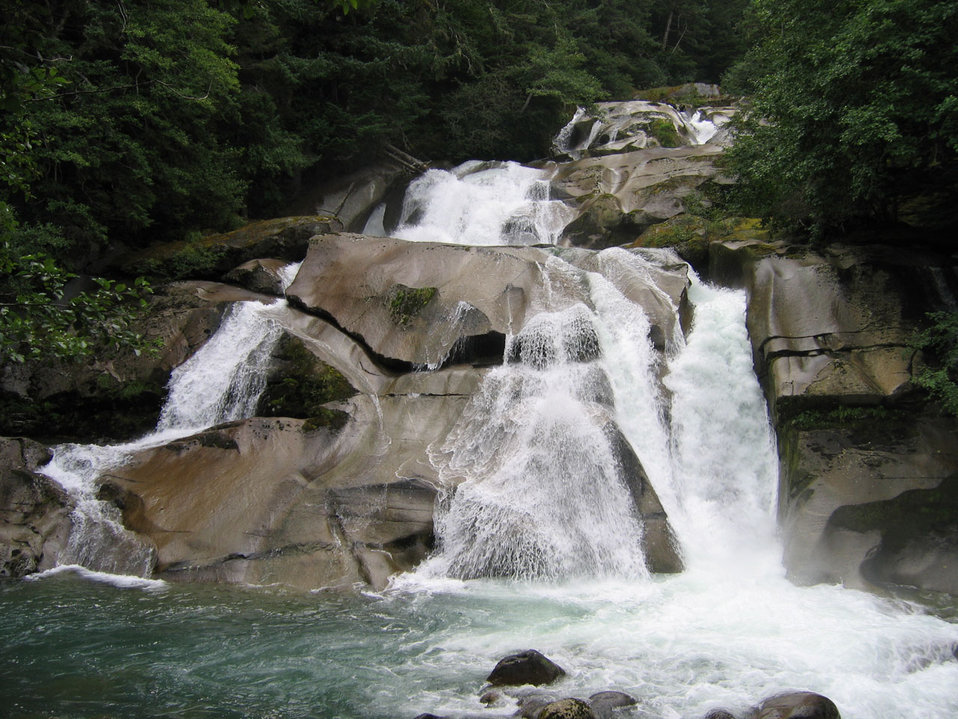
Clayton falls, bella coola, british columbia.